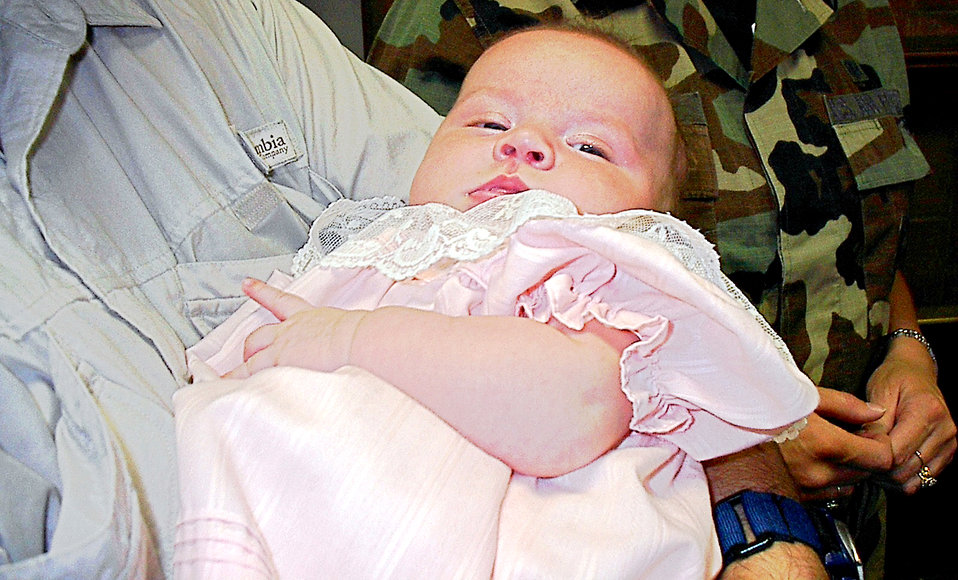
Baby Katie

MCCHORD AIR FORCE BASE, Wash. -- Katie Murphy was born May 1 and overcame the complications of a premature birth plus her mother's cervical cancer. Katie's mom, Becky, is now cancer-free.